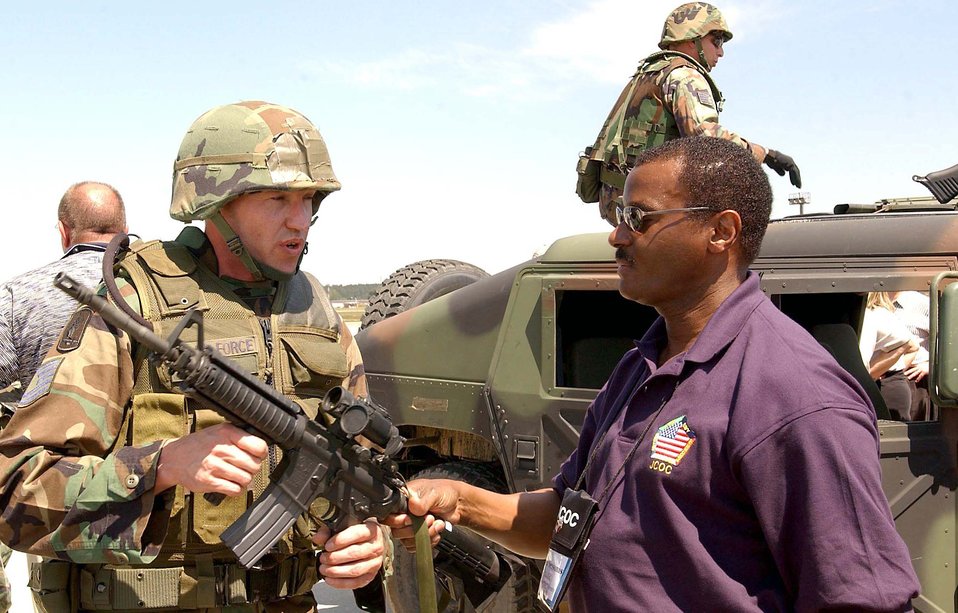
Civilians learn about USAFE

RAMSTEIN AIR BASE, Germany -- Tech. Sgt. Chet Kelly discusses contingency response operations here with Dr. Allen Sessoms. Dr. Sessoms and other business, academic and local government leaders nationwide participated in the 2004 Joint Civilian Orientation Conference on June 8. Sergeant Kelly is assigned to the 786th Security Forces Squadron, and Dr. Sessoms is president of Delaware State University.